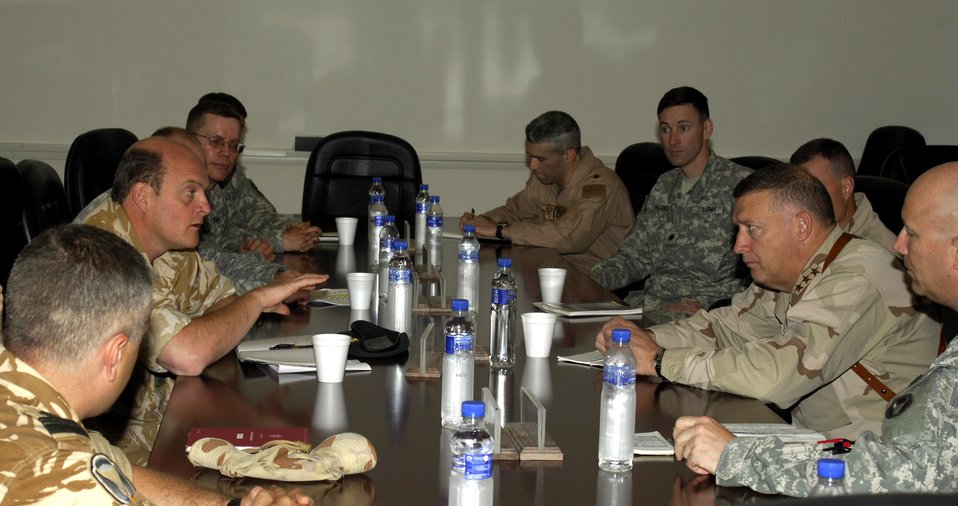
Coalition efforts in Iraq

Col. Ed Brown, British Multinational Defense-Southeast Brigade Forward West commander (left center), explains his nation's role in the coalition effort at Ali Base, Iraq, to Lt. Gen. Gary North, U.S. Central Command Air Forces commander, April 17. General North met with the colonel and other senior leaders from the multi-national force assigned to Ali AB. After hearing descriptions of each unit's mission, the general briefed the commanders on what he predicts will be a long-term involvement with the Iraqi government. Also pictured are representatives from the Romanian 495th Infantry Battalion, Australian Overwatch Battlegroup, U.S. Army 1/34th Brigade Combat Team, U.S. Army 258th Rear Area Operations Center, U.S. Army 82nd Brigade Support Battalion, U.S. Army Combined Joint Special Operations Task Force, and U.S. Navy P-3 operations.